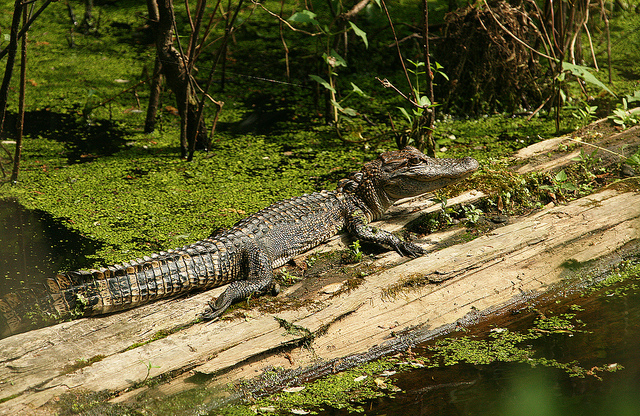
alligator

Young alligator sunning on a log
Yazoo National Wildlife Refuge, MS